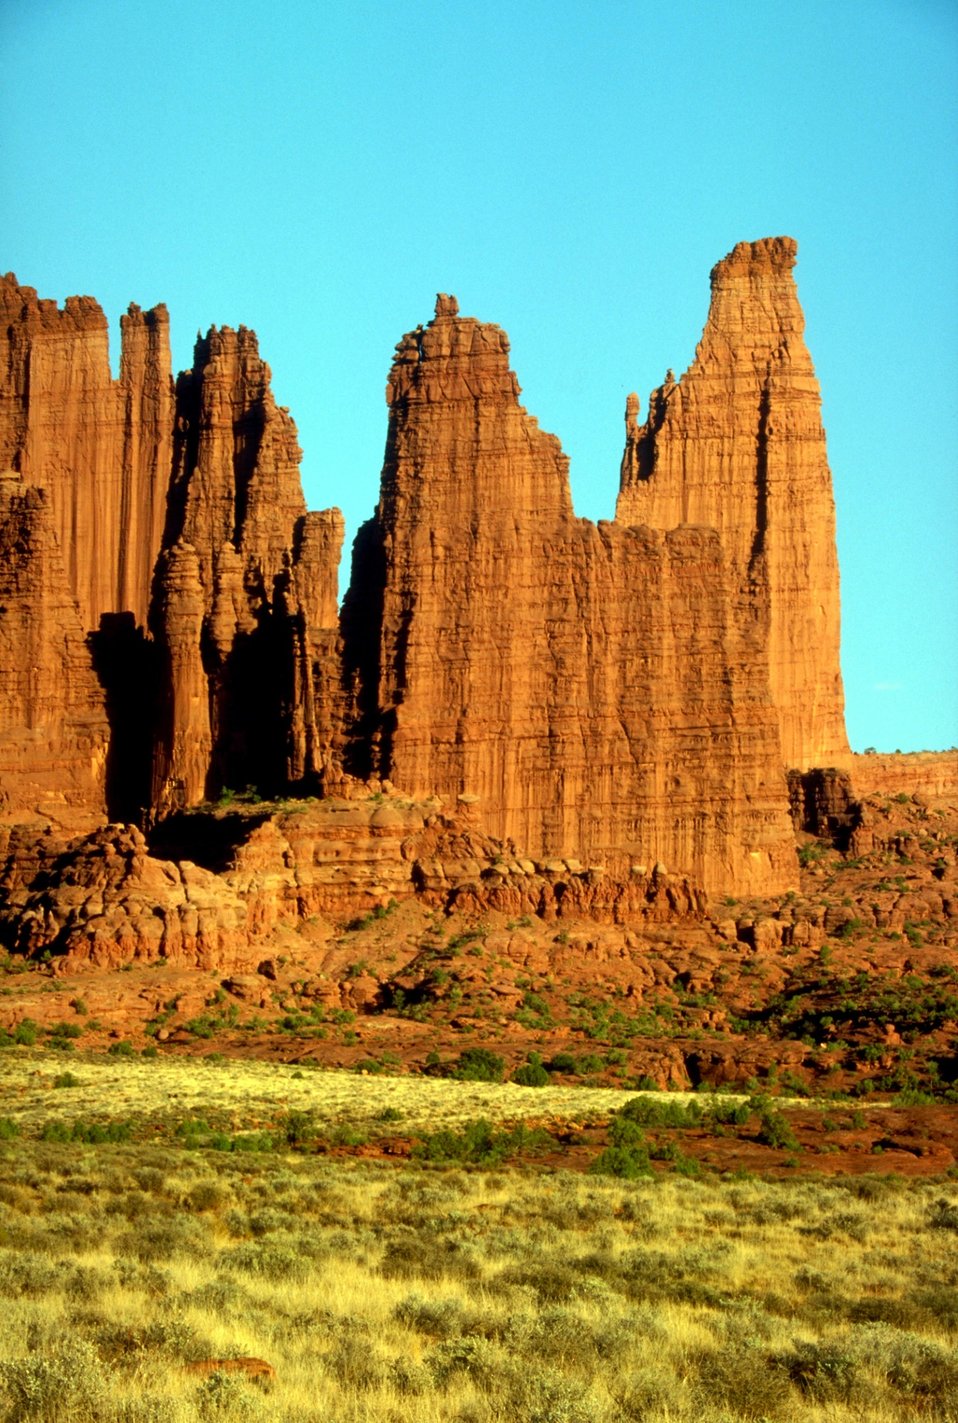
Fisher Towers along Highway 128, near Moab, Utah.